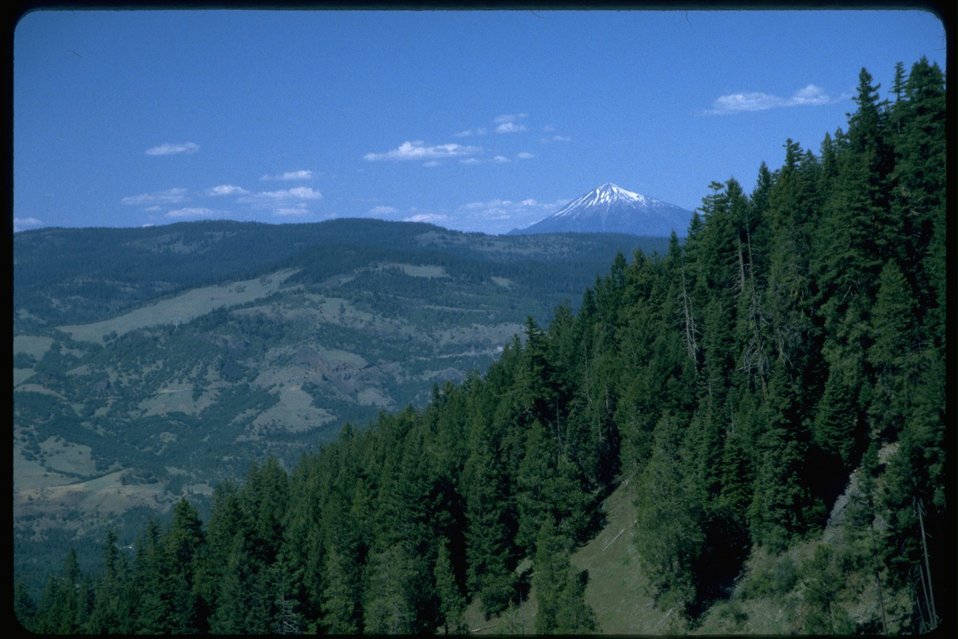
Wide angle shot of Mt. McLoughlin from Cascade-Siskiyou National Monument (CSNM).